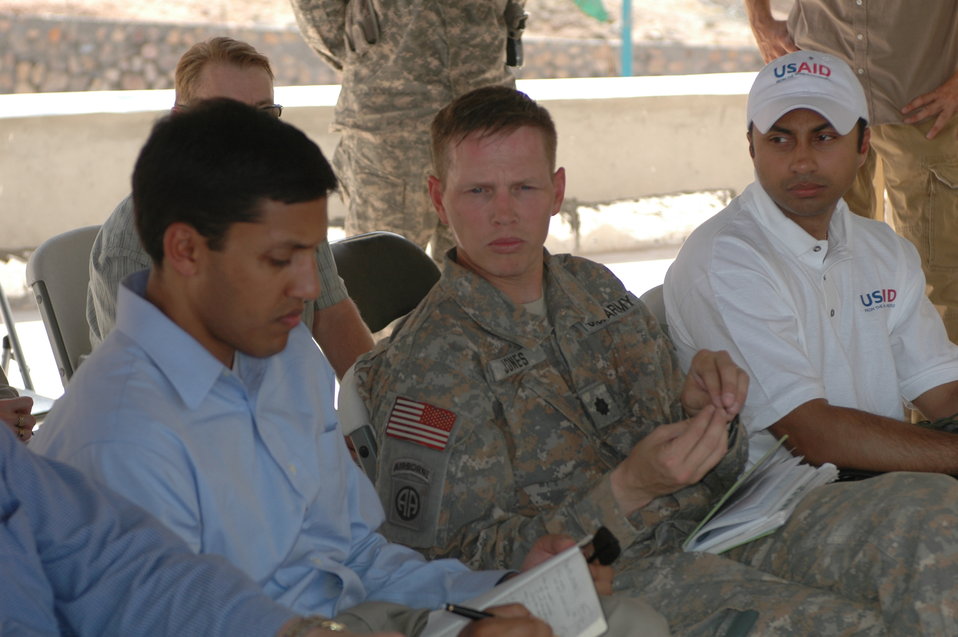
Dr Shah Visits Kandahar April 9, 2010